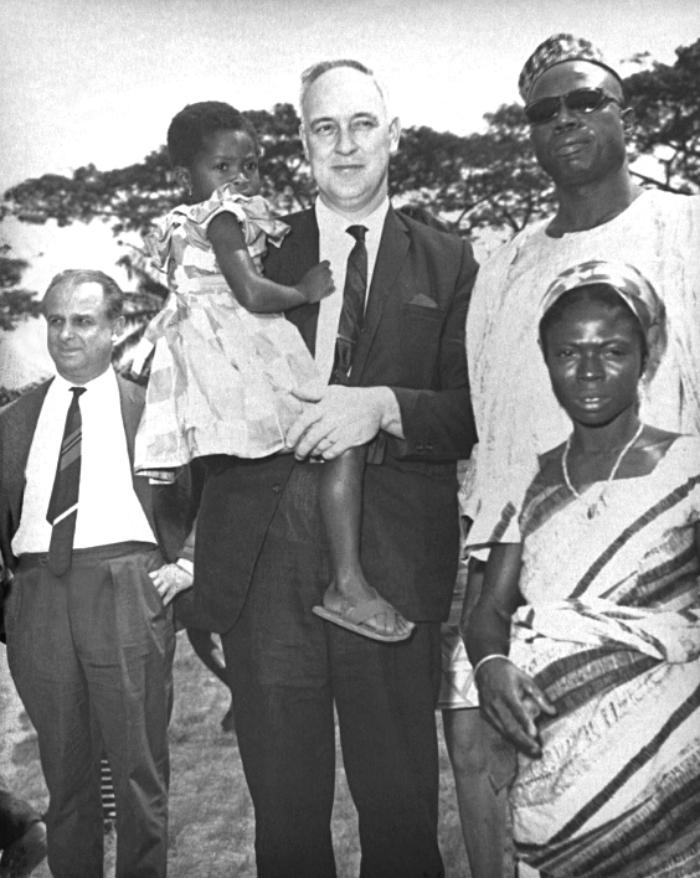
This was 1968 U.S. Surg. Gen. William Stewart (Cntr) holding Rebecca Ansah Asamoah of Ghana, the 25 millionth smallpox vaccinee.